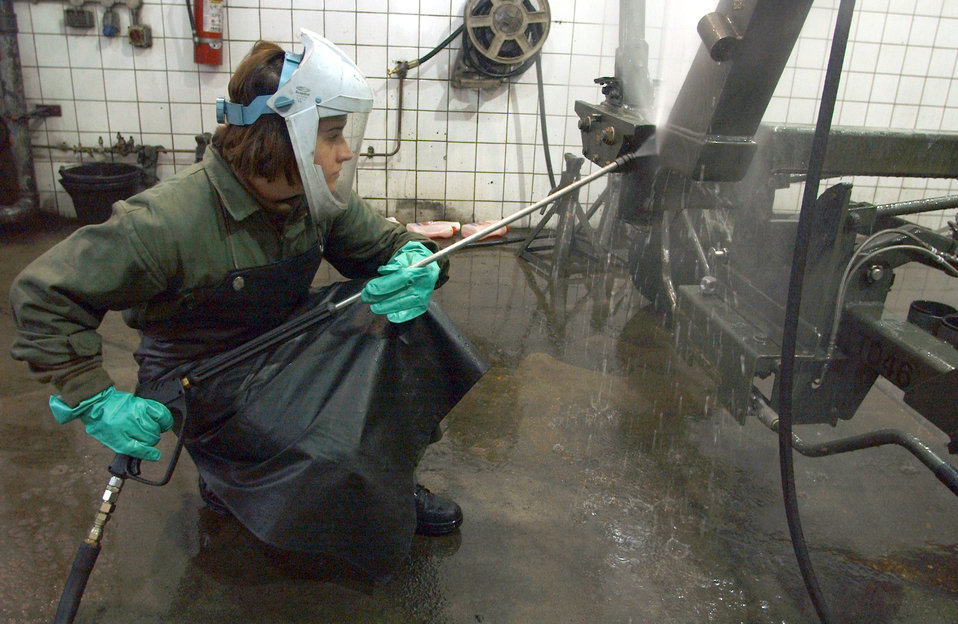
A good cleaning

ROYAL AIR FORCE LAKENHEATH, England -- Staff Sgt. Michelle Fiaella washes a conformer fuel tank dolly as part of a phase inspection here April 6. Sergeant Fiaella is an aircraft ground equipment journeyman with the 48th Equipment Maintenance Squadron. The dolly is used to remove fuel tanks from F-15 Eagle aircraft.